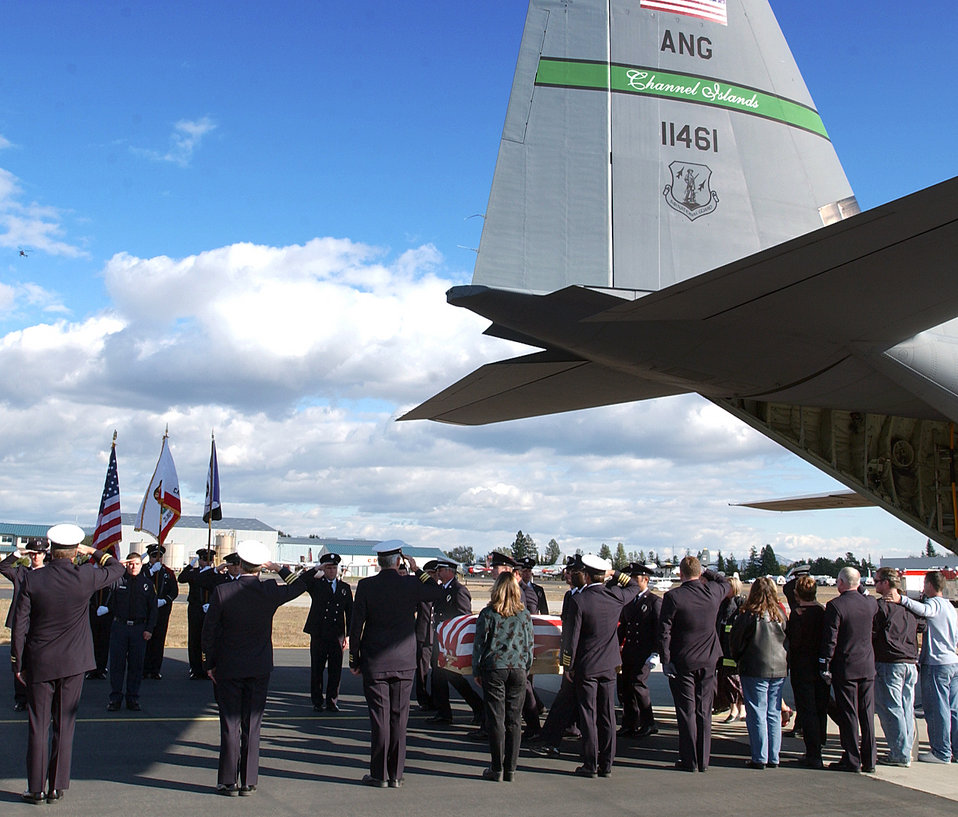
Solemn salute

SANTA ROSA COUNTY AIRPORT, Calif. -- Firefighters salute as the casket of firefighter Steven Rucker is taken from an Air Force C-130 Hercules here. Rucker, an engineer with the Novato Fire Protection District, died Oct. 29 in San Diego County's Cedar fire.